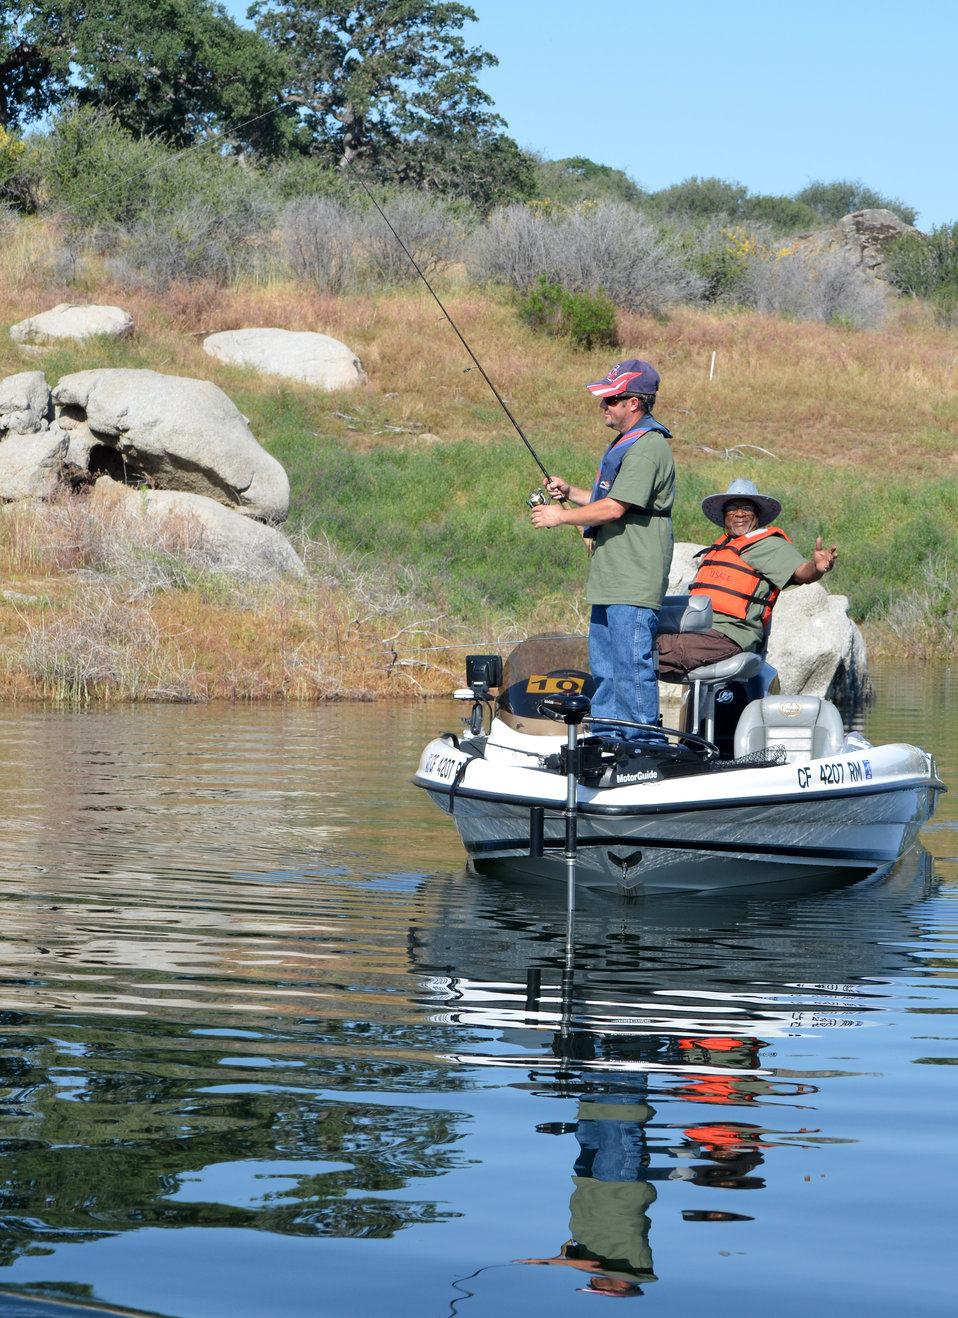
'Take a Warrior Fishing' event at Eastman Lake

A veteran and a local volunteer showoff their catch during the 'Take a Warrior Fishing' event at Eastman Lake, Calif., May 12, 2012. The event was the first of its kind for the U.S. Army Corps of Engineers Sacramento District.